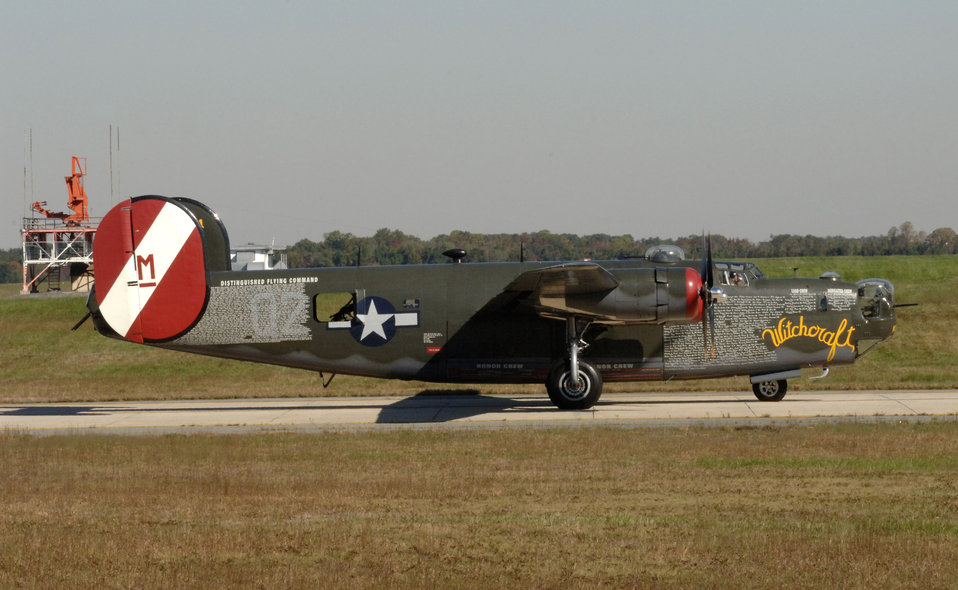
AF Memorial: Warming up for the big show

A B-24 Liberator taxies down the runway during a practice run Oct. 13 at Andrews Air Force Base, Md. Numerous aircraft from the 1930s through modern day will fly over the Air Force Memorial during the official dedication ceremony Oct. 14 in Arlington, Va.